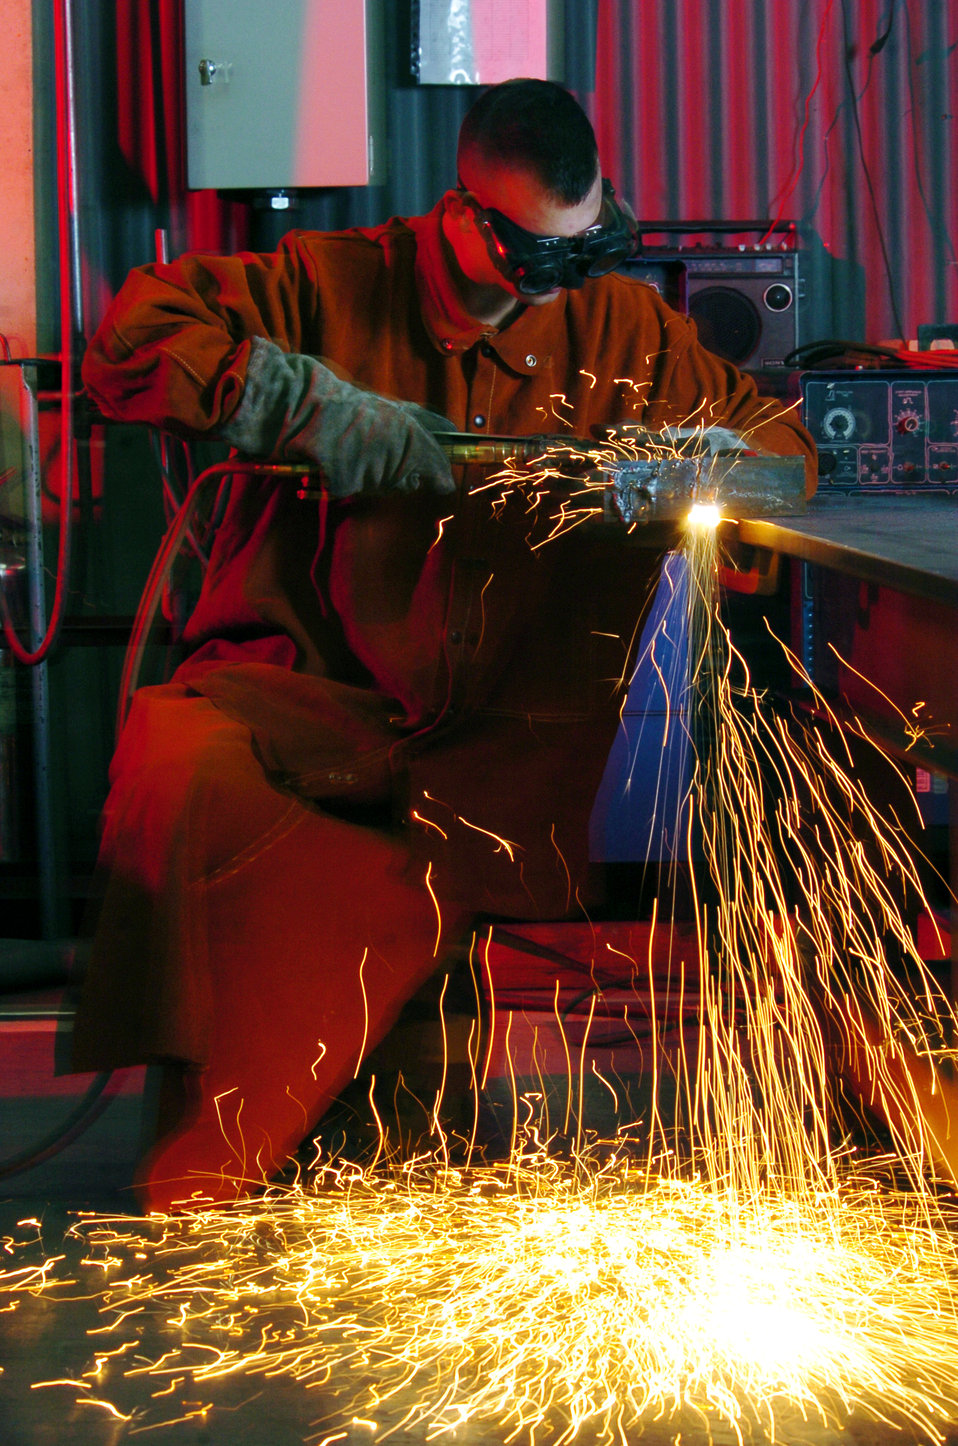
Making the cut

YOKOTA AIR BASE, Japan -- Senior Airman Matthew Nerat uses an acetylene torch to cut metal. He and other 374th Civil Engineer Squadron Airmen here build, maintain and repair facilities for the Air Force's Western Pacific airlift hub. They also provide engineering, fire protection, environmental planning, housing and utilities for a 1,750-acre base and 12 satellite installations totaling 2,251 acres.